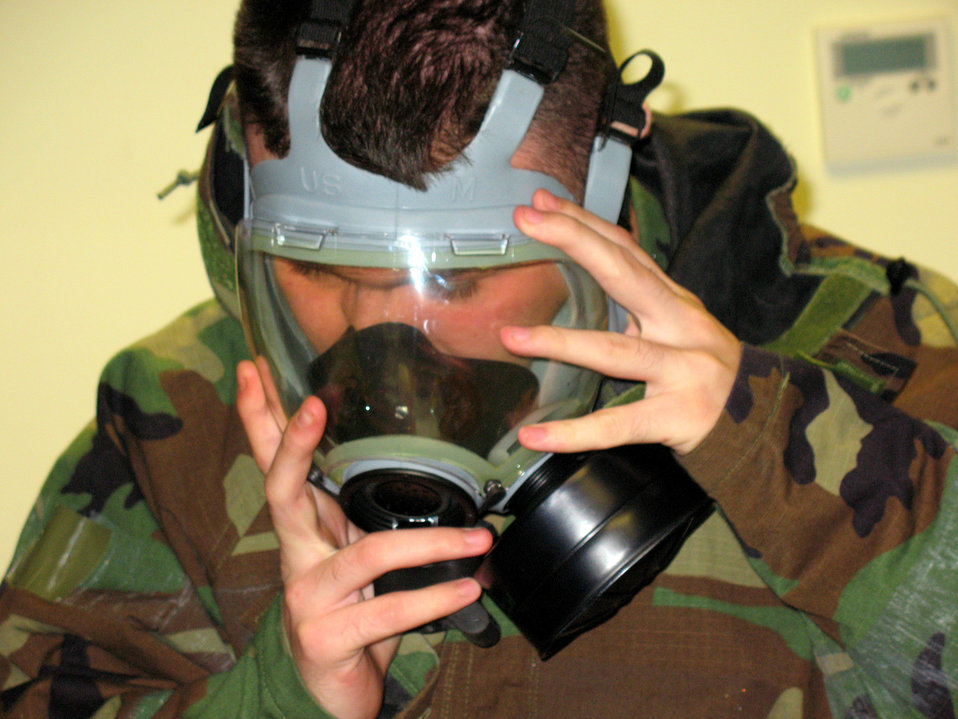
Incirlik Airmen practice emergency response

An Airman dons a gas mask during an April 2 exercise at Incirlik Air Base, Turkey. Base members were evaluated on how they could respond to a major earthquake and other scenarios during the exercise to ensure they are prepared and trained for potential threats.